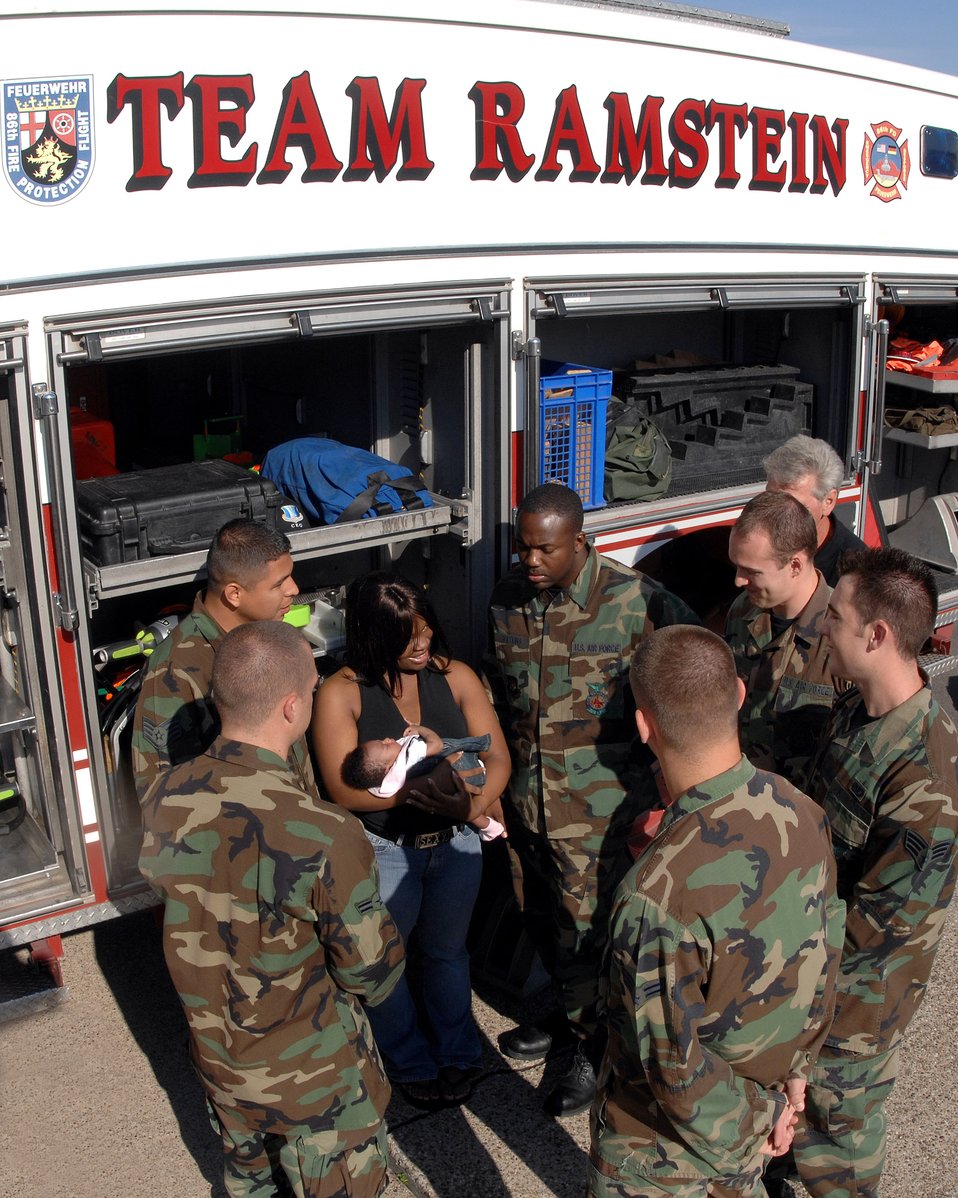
Unexpected delivery made at Ramstein's gate

Senior Airman Kenyata Jenkins stands with her new daughter Jordan Dixon and the 435th Civil Engineer firefighters July 16 at Ramstein Air Base, Germany. The firefighters delivered the baby at the base's west gate July 1 when Airman Jenkins' labor progressed too quickly for her to make it to Landstuhl Regional Medical Center.